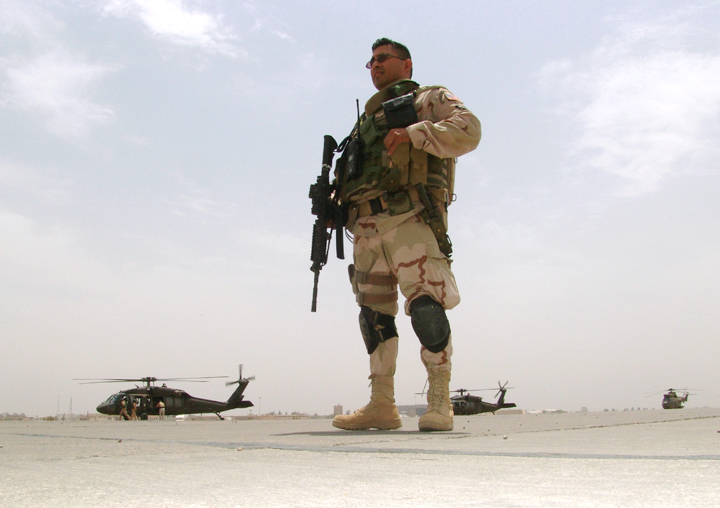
Securing the line

BAGHDAD, Iraq -- Tech. Sgt. Michael Moreno provides security for officials traveling to and from Baghdad International Airport. He is assigned to the 447th Expeditionary Security Forces Squadron here and is deployed from Dyess Air Force Base, Texas.